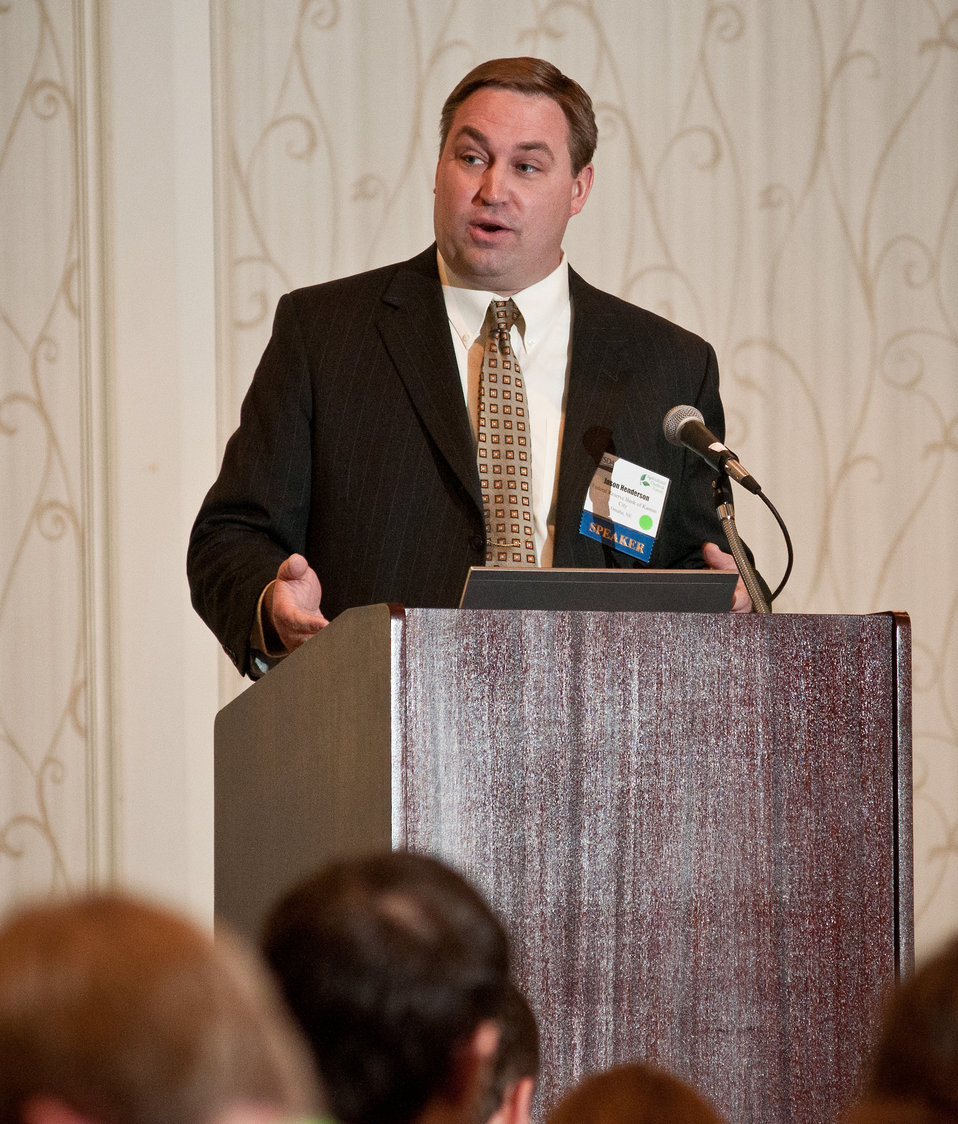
Federal Reserve Bank of Kansas City Omaha Branch Vice-President and Branch Executive Jason R. Henderson spoke to the Grains and Oilseeds Luncheon, duringFederal Reserve Bank of Kansas City, Omaha Branch Vice-President and Branch Executive Jason R. Henderson spoke to the Grains and Oilseeds luncheon, during the U.S. Department of Agriculture (USDA), 2013 Agricultural Outlook Forum held at the Crystal Gateway Marriott Hotel in Arlington, VA on Friday, Feb. 22, 2013. USDA photo by Lance Cheung. the U.S. Department of Agriculture (USDA) 2013 Agricultural Outlook Forum held at the Crystal Gateway Marriott Hotel in Arlington, VA on Friday, Feb. 22, 2013.